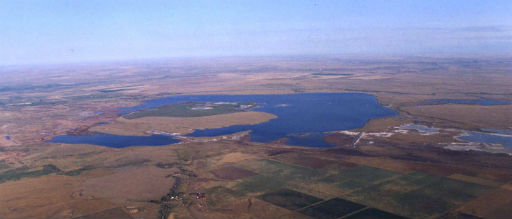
Aerial of Bowdoin NWR

Lake Bowdoin from the air